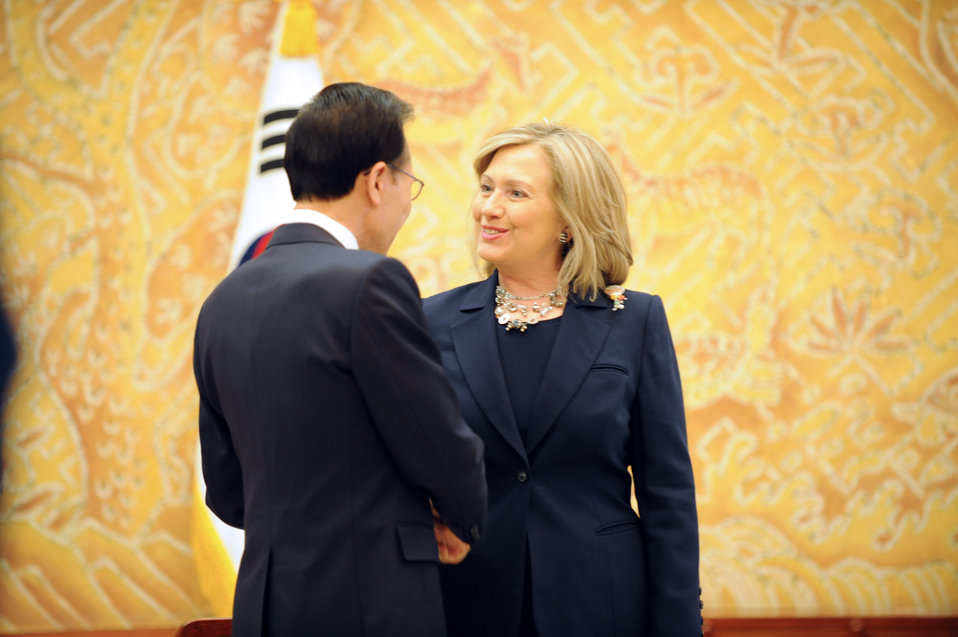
Secretary Clinton Is Greeted By Republic of Korea President Lee Myung-bak

U.S. Secretary of State Hillary Rodham Clinton is greeted by Republic of Korea President Lee Myung-bak at a meeting in Seoul, South Korea, on April 17, 2011.